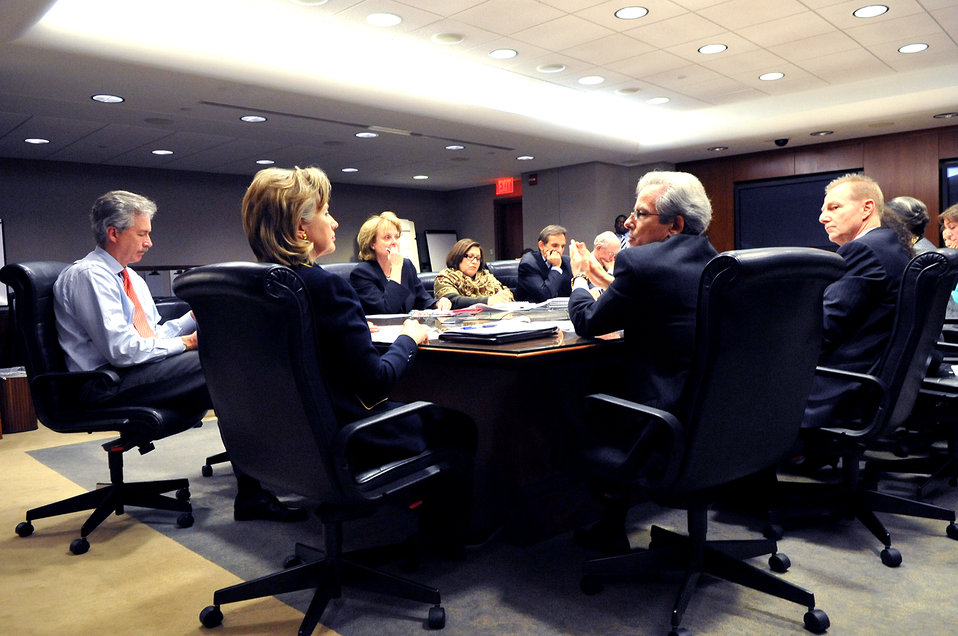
Secretary Clinton Meets With Her Messaging Team

U.S. Secretary of State Hillary Rodham Clinton meets with her messaging team to plan for her upcoming trip at the State Department, Washington, DC February 23, 2010.